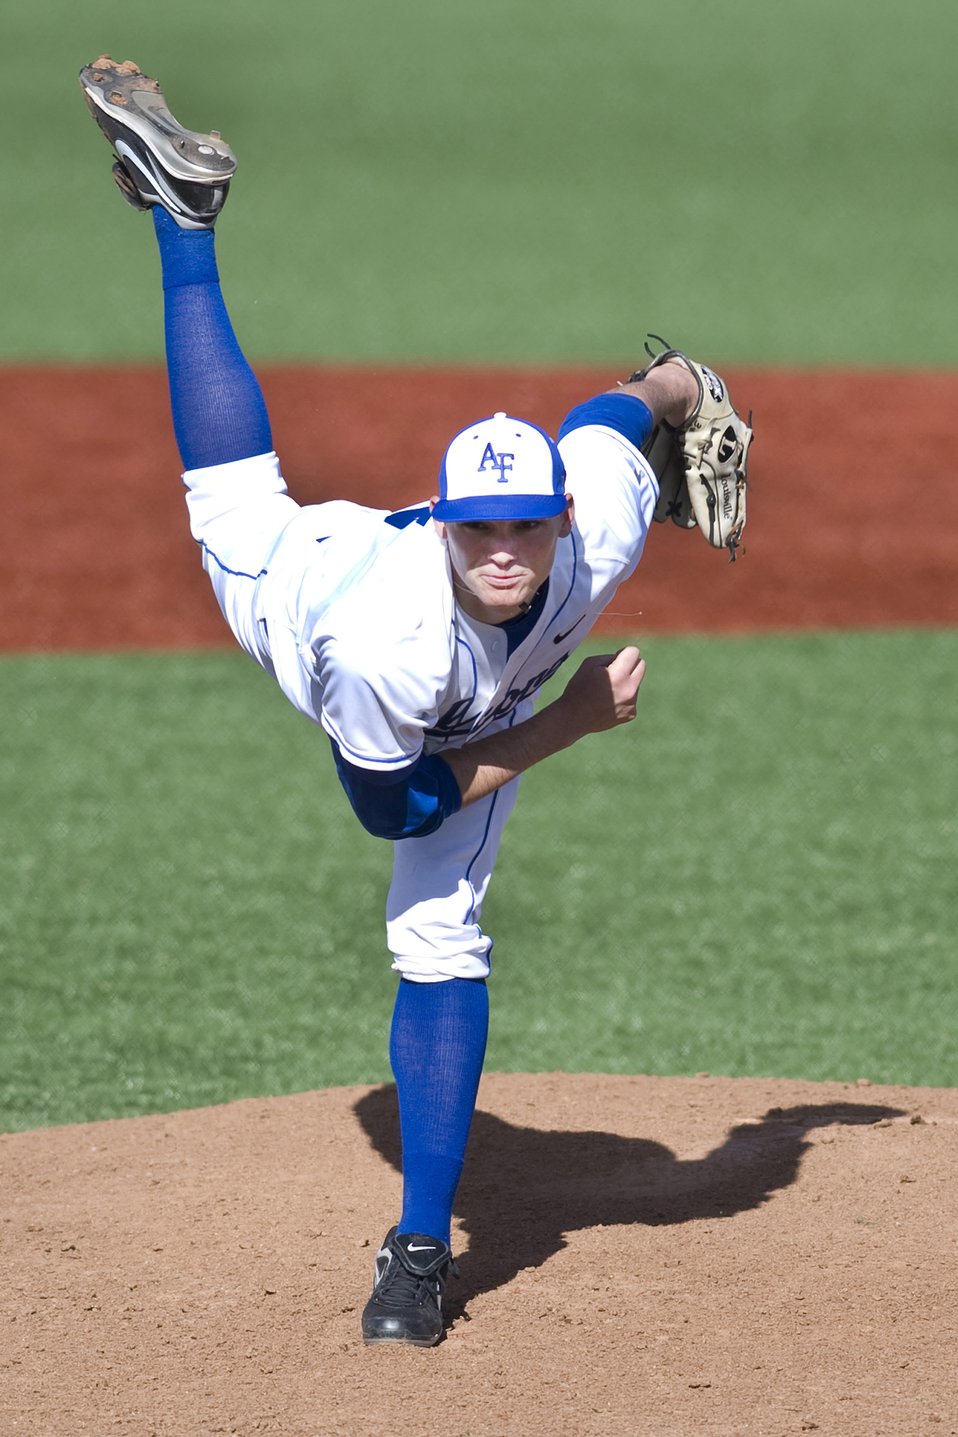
Falcons defeat South Dakota State

Falcon senior pitcher Alex Truesdale follows through on a pitch against South Dakota State during their March 5, 2010, baseball game held at the U.S. Air Force Academy's Falcon Field in Colorado. The Falcons rallied with 6 runs in the bottom of the 8th inning to win the contest 12-11.